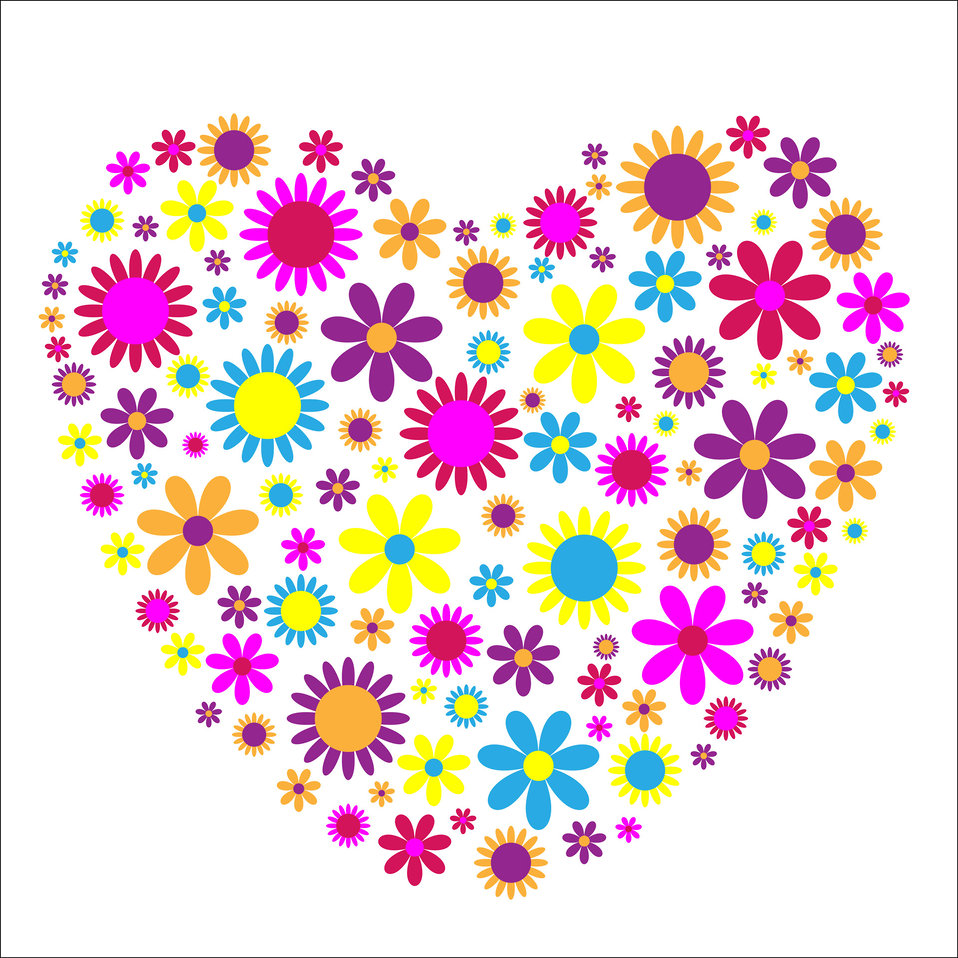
Floral heart

Colorful floral heart for scrapbooking.